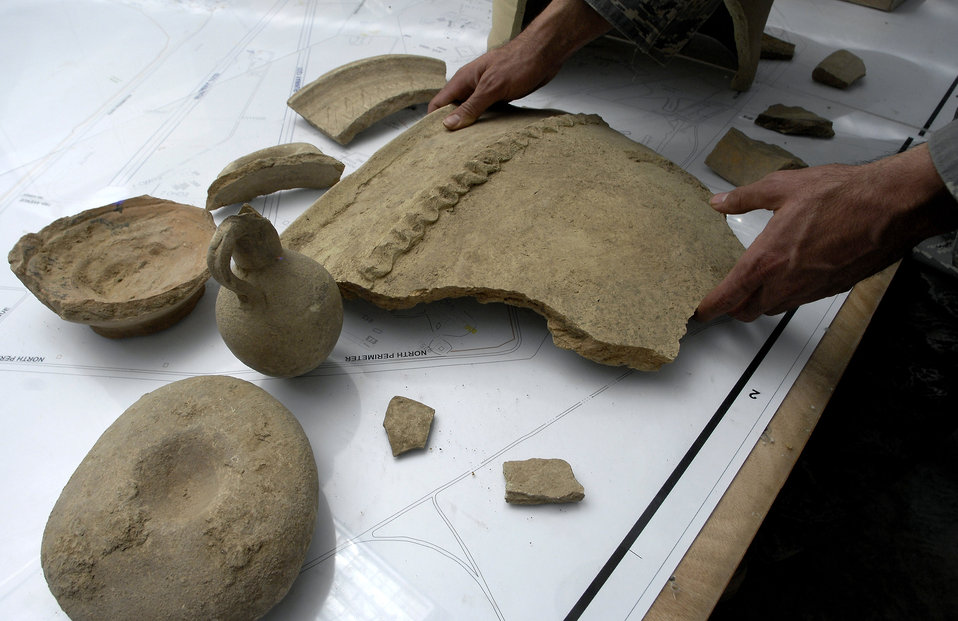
Deployed Airmen find ancient artifacts at Iraqi air base

Second Lt. Brian Wernle looks over artifacts Dec. 26 found during construction at Kirkuk Air Base, Iraq. In the past month, artifacts have been found by civil engineering Airmen at four different sites. Lieutenant Wernle is the base environmental engineer with the 506th Expeditionary Civil Engineer Squadron.